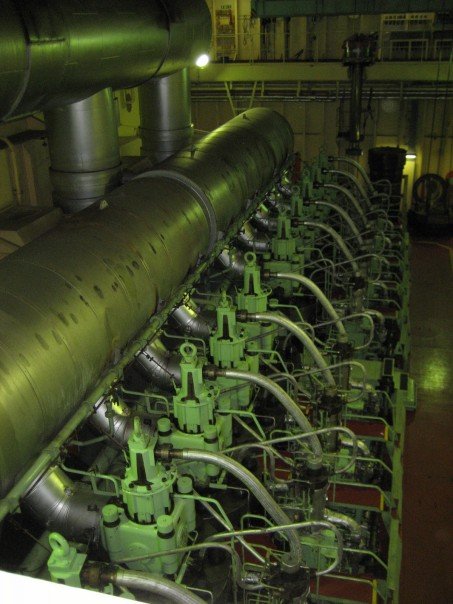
The MAN B&W 10K90MC-C two-stroke diesel engine, found on large container ships and developing 58,600BHP (43,100kW). Source: Xtrememachineuk (talk) 23:20, 22 April 2008 (UTC)